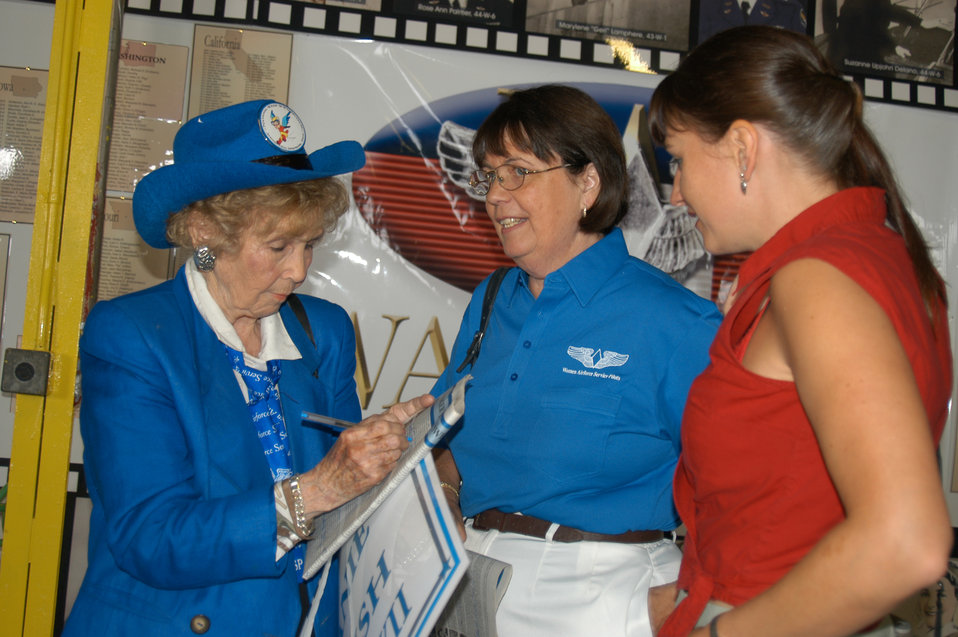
World War II women warriors pass on history, heritage

AVENGER FIELD, Texas -- Deanie Parrish, one of the Women's Airforce Service Pilots, signs an autograph for Vickie Heckman (center) and her daughter, Aimee, inside the new National WASP World War II Museum here, which opened May 28.